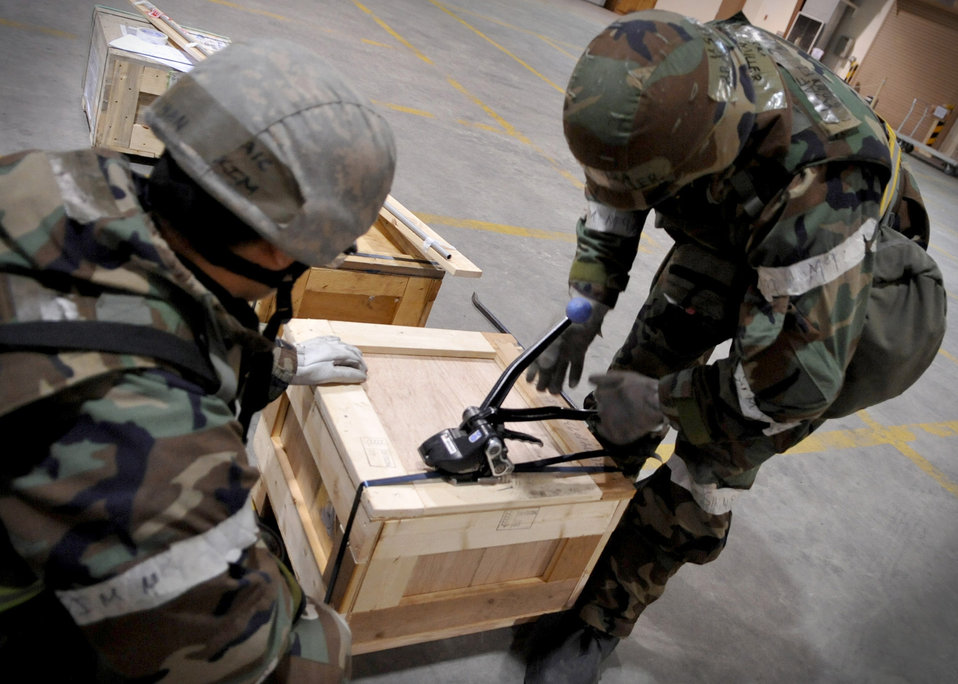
51st LRS Airmen support Operation Tomodachi during ORE

Airmen from 51st Logistics Readiness Squadron processed 18,000 pounds of cargo March 14, 2011, at Osan Air Base, South Korea, in support of Operation Tomodachi. The supplies were being transported to the Ronald Reagan Carrier Group to continue humanitarian-aid missions off the east coast of Honshu, Japan.